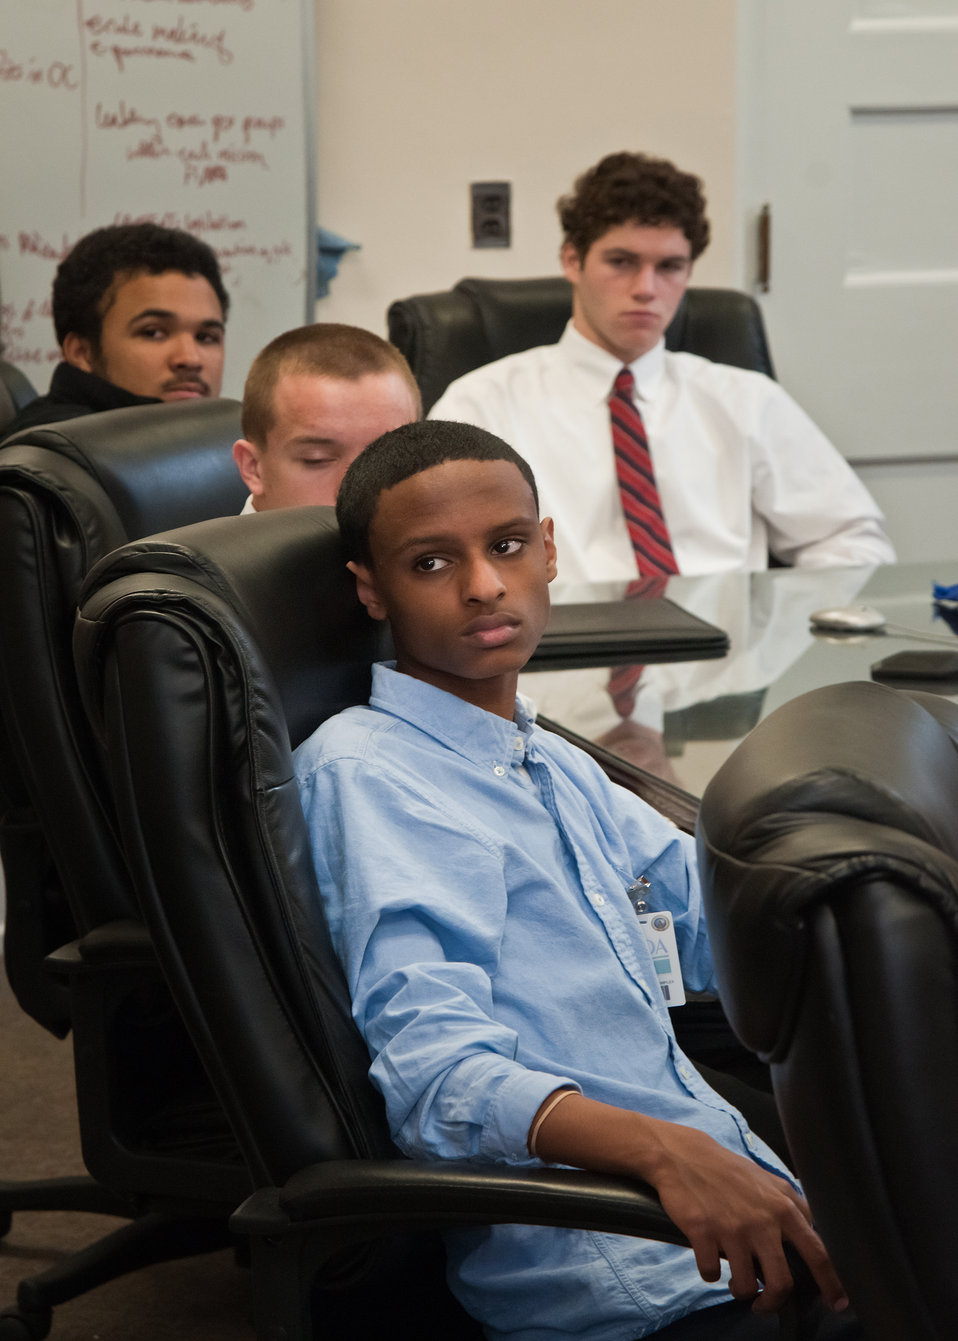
Nebil Maeruf, Colby Shinholser, Michael Hughes, Gregory Ridgeway students from the Springbrook High School, in Silver Spring, Maryland visited the United States Department of Agriculture (USDA) with members of the Academy of Information Technology on Wednesday, April 13, 2011. USDA holds an Information Technology Job Shadow Day annually. It is an opportunity for students from local high schools to learn the breadth and depth of information technology at USDA and how it is applied the department. Students toured the Network Operations Center, the Badging Office and had a lecture on geospatial technology.